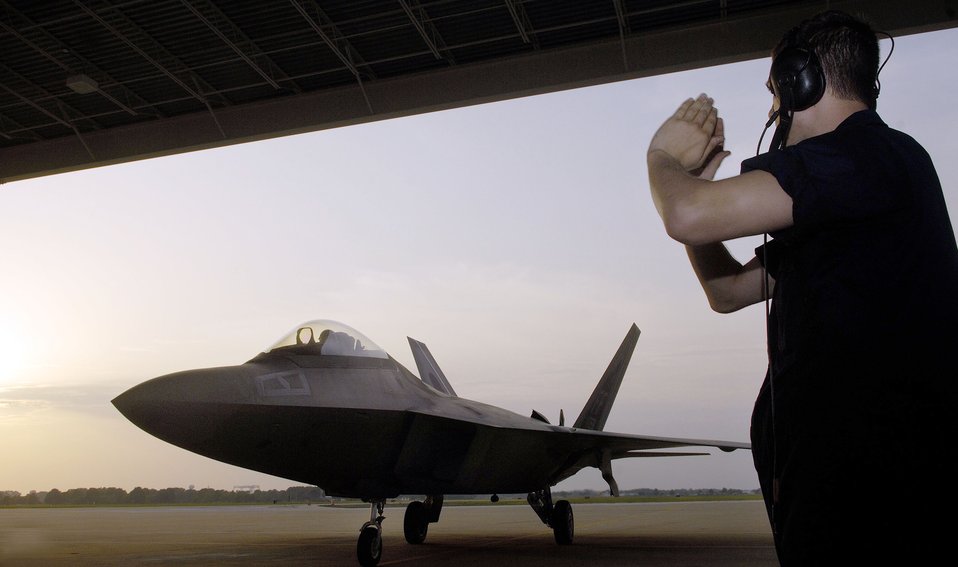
Langley aircraft return home

Senior Airman Stephan Pfalzer marshals in Capt. Jeremy Gordon in an F-22 Raptor at Langley Air Force Base, Va., on July 28. The 27th, 71st and 94th Fighter Squadrons have been flying sorties and participating in various exercises around the country while upgrade repairs were being done to their home runway. Airman Pfalzer is a crew chief with the 27th FS. Captain Gordon is an F-22 pilot assigned to the 94th FS.